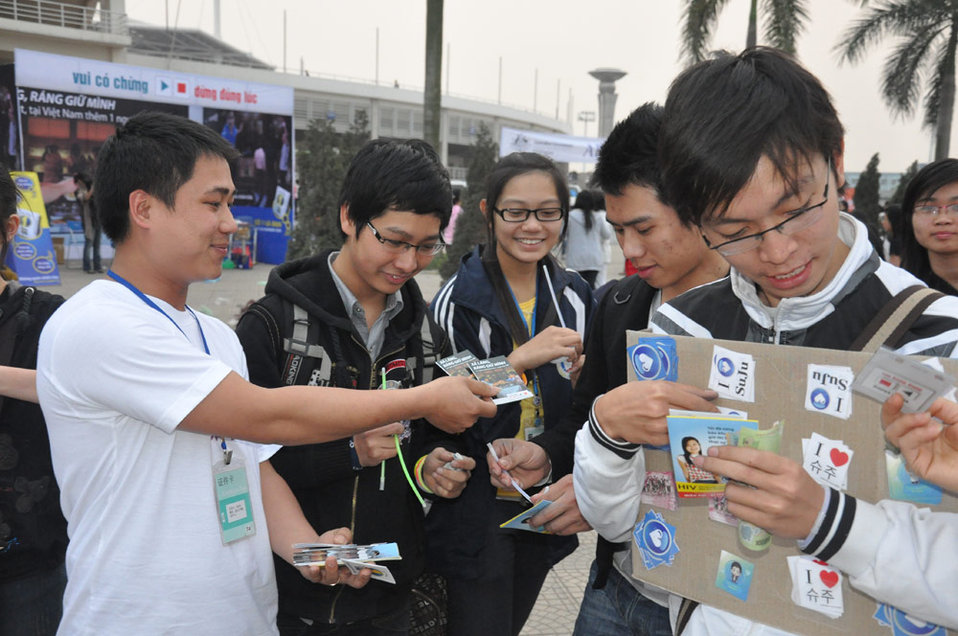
USAID Vietnam and MTVEXIT against Human Trafficking

Hanoi concert, March 27, 2010